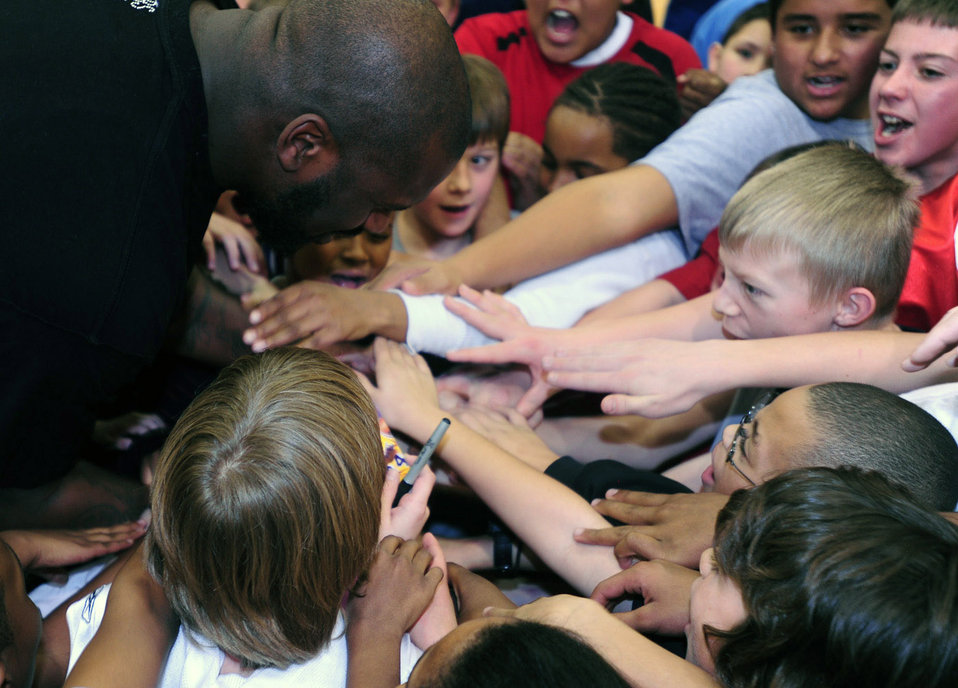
One, two, three - - break

Phoenix Suns center Shaquille O1Neal gets the kids pumped up with a chant during a basketball clinic Jan. 14 at Buckley Air Force Base, Colo. Mr. O'Neal spoke to more than 265 children of military members about what it was like for him growing up in a military environment.